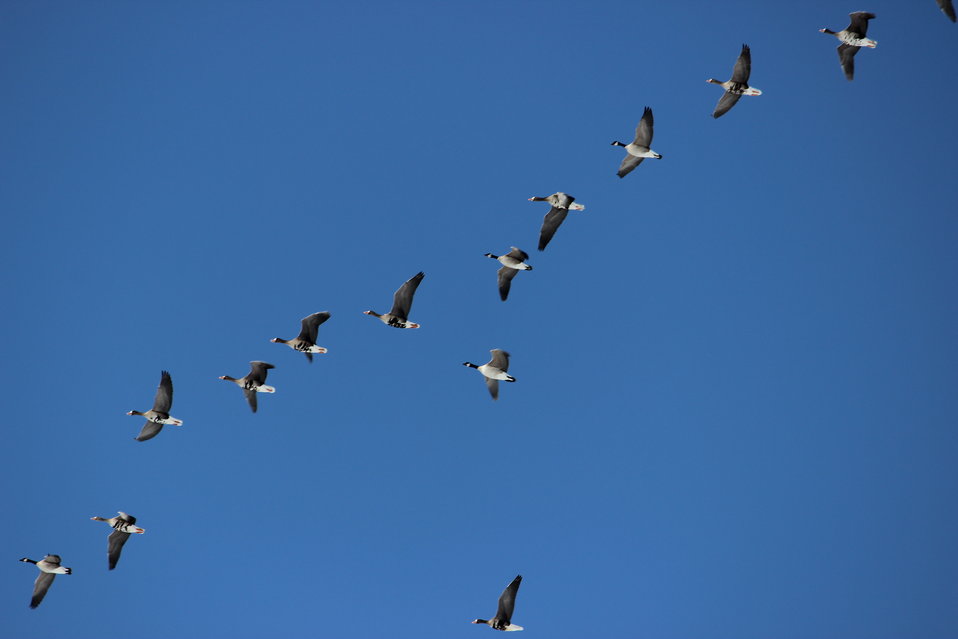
Two kinds of Geese

It is common to see different species migrating together. These Greater white-fronted geese (Anser albifrons) and Canada geese (Branta canadensis) are flying over the Kulm Wetland Management District on their way to their nesting grounds.